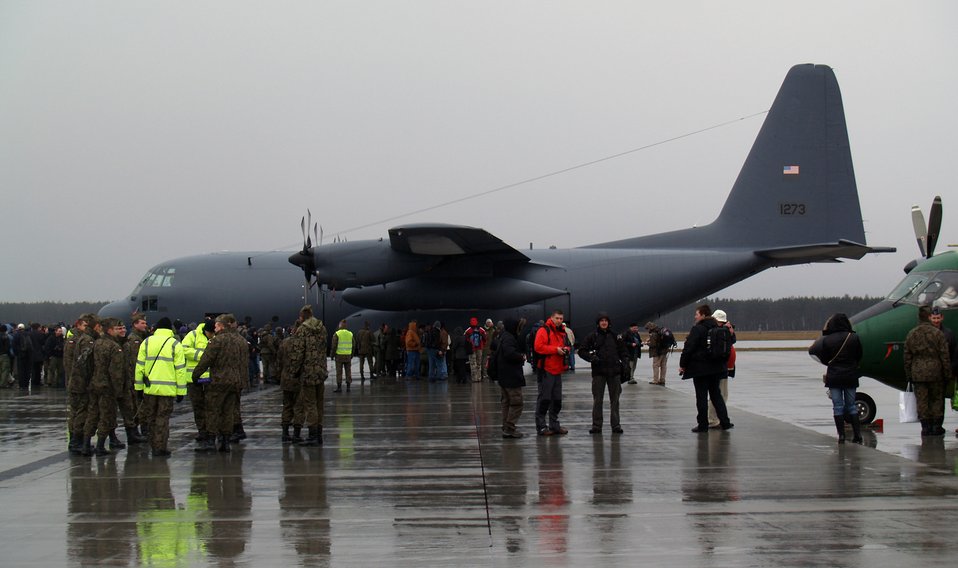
Air Force officials deliver first C-130 to Polish military

Polish visitors and media view the first of five refurbished C-130E Hercules military transport planes and spare parts delivered March 24 to the Polish air force at Powidz Air Base, Poland.